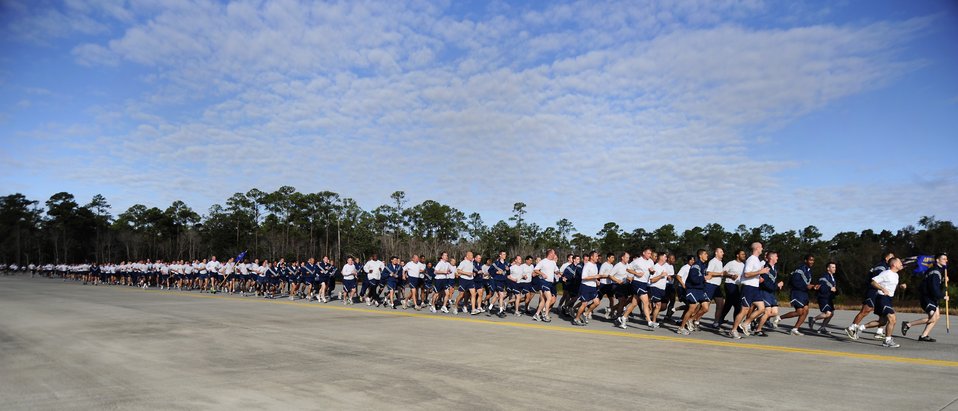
1 SOW Wing Run

U.S. Air Force Airmen run in formation during a 5 km base-wide run, Hurlburt Field, Fla., Nov. 7, 2011. Air Commandos ran in formation promoting a sense of unity.